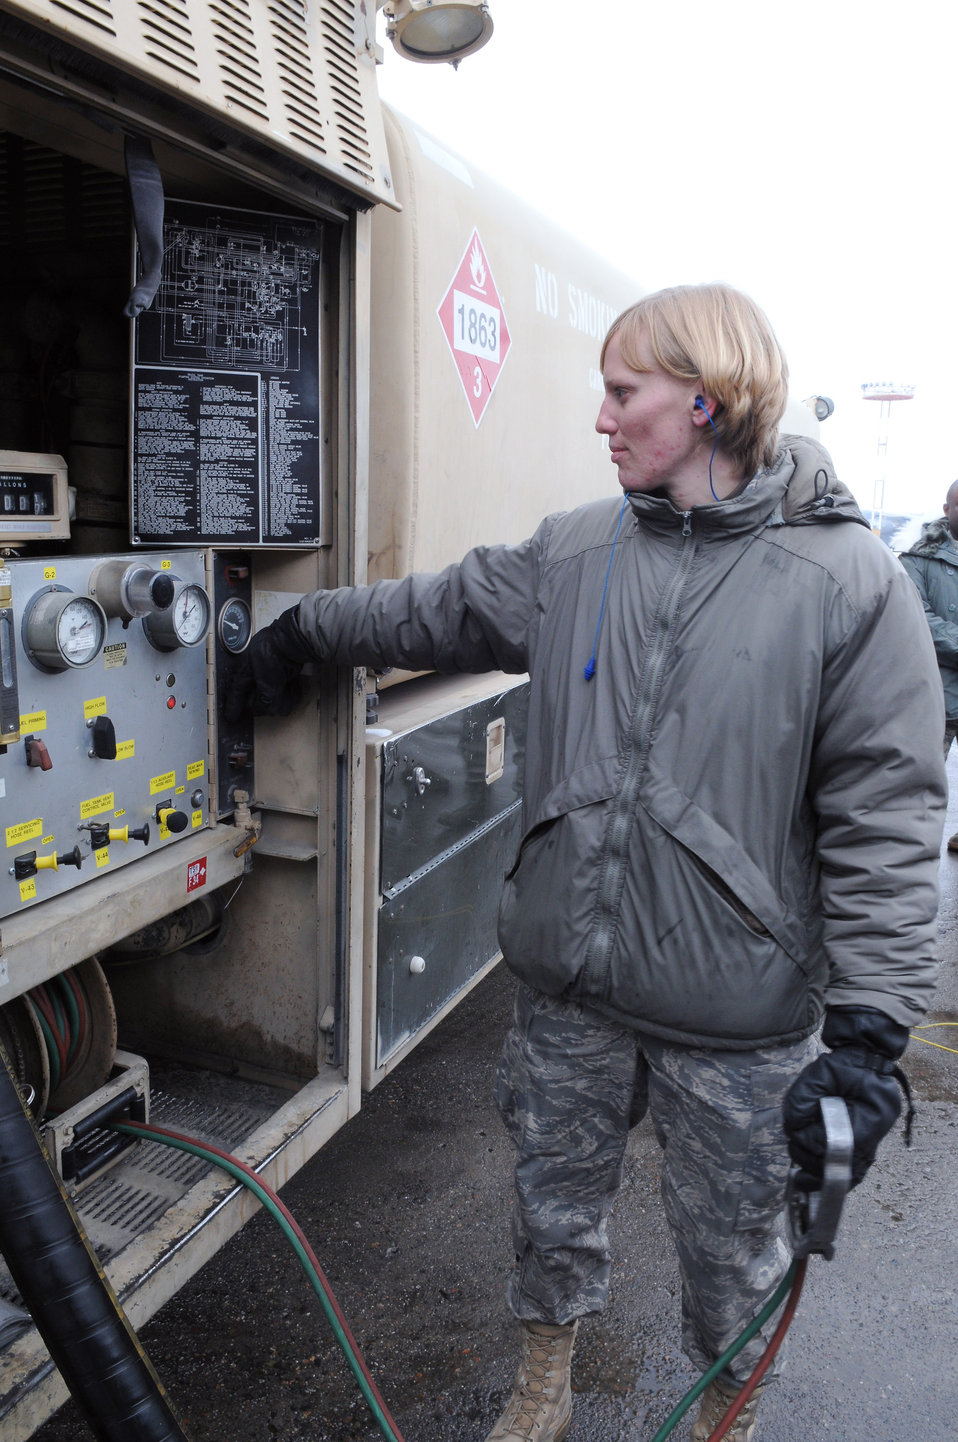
Filler' up--with two million gallons of premium

Senior Airman Victoria Drefs prepares to pump fuel from her R-11 fuel truck into a KC-135 Stratotanker to surpass the two million gallon mark for fuel delivered during her deployment. Airman Drefs is a fuels specialist with the 376th Air Expeditionary Wing at Manas Air Base, Kyrgyzstan.